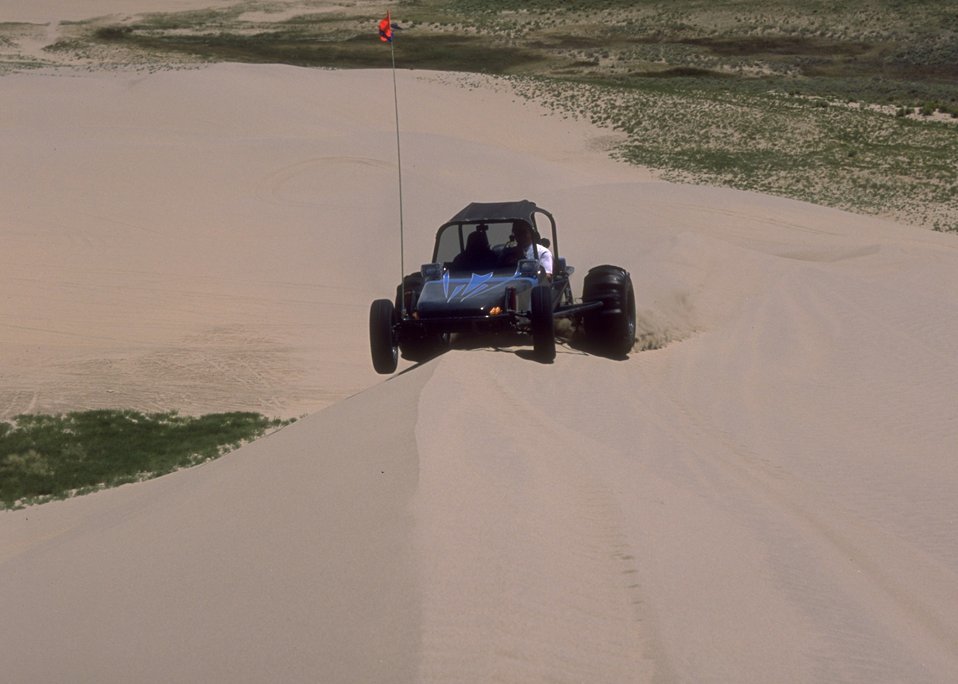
Sand Dunes OHV Area, Rock Springs Field Office.